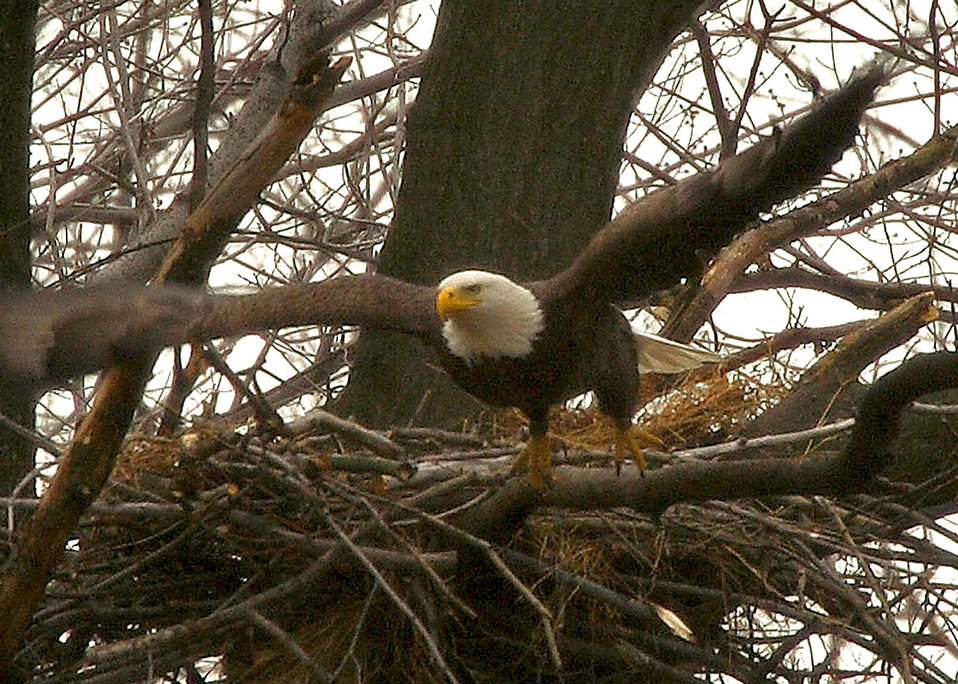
Bald eagle take off from nest

Bald eagle taking flight at John Heinz National Wildlife Refuge in Philadelphia, Pennsylvania.